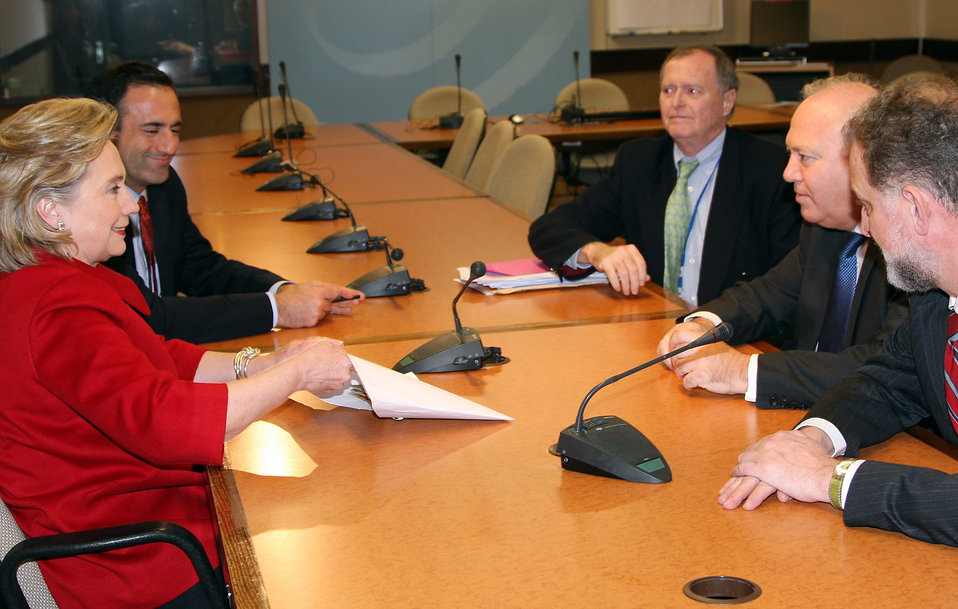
Secretary Clinton Meets With Spanish Foreign Minister

U.S. Secretary of State Hillary Rodham Clinton participates in a bilateral meeting with Spanish Foreign Minister Miguel Angel Moratinos in Brussels, Belgium December 4, 2009.